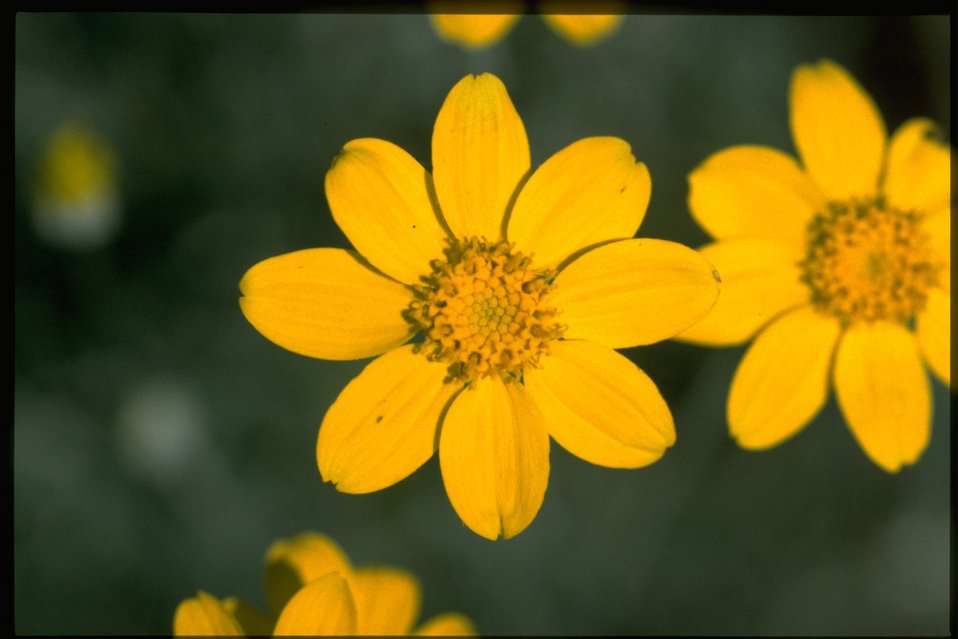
Closeup shot of Eriophyllum lanatum.